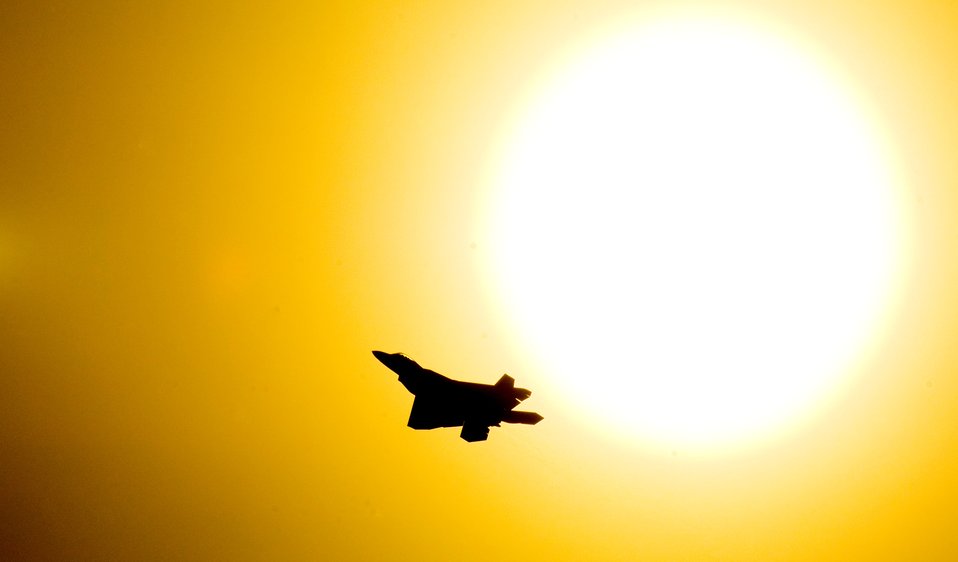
Rising high into the sun

An F-22 Raptor makes a pass by a slowly setting Alaskan sun while pracing touch and goes at Elmendorf Air Force Base, Alaska, Sept. 17.